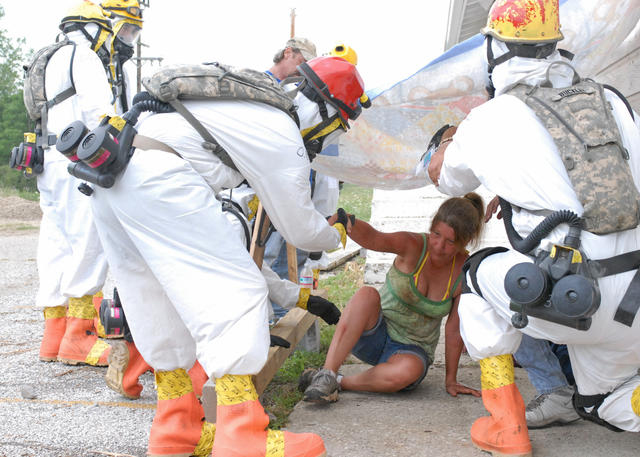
Vibrant Response 13

Army military policemen assigned to the 811th Engineer Company help simulated survivors evacuate a neighborhood involved in a simulated nuclear blast attack at the Muscatatuck Urban Training Center at Camp Atterbury, Ind., July 26, 2012, during exercise Vibrant Response 13.